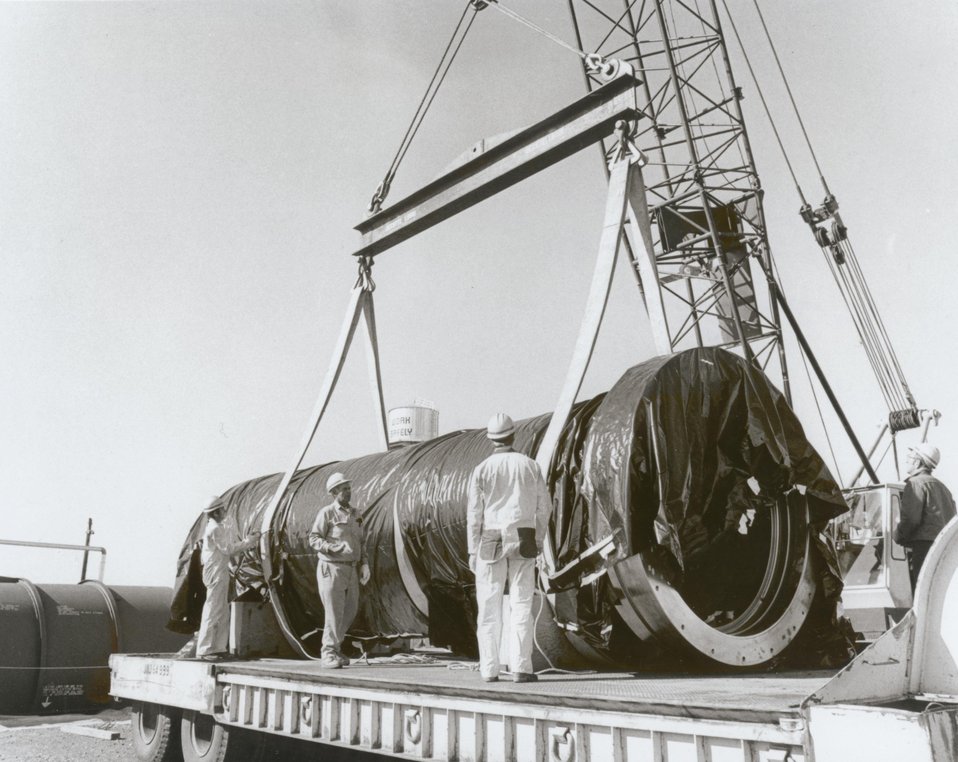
The first of three 121,000-pound intermediate heat exchanger units is being unloaded at the Fast Flux Test Facility, (FFTF) at the U.S. Atomic Energy Commission's Hanford Washington site.
c. 1974